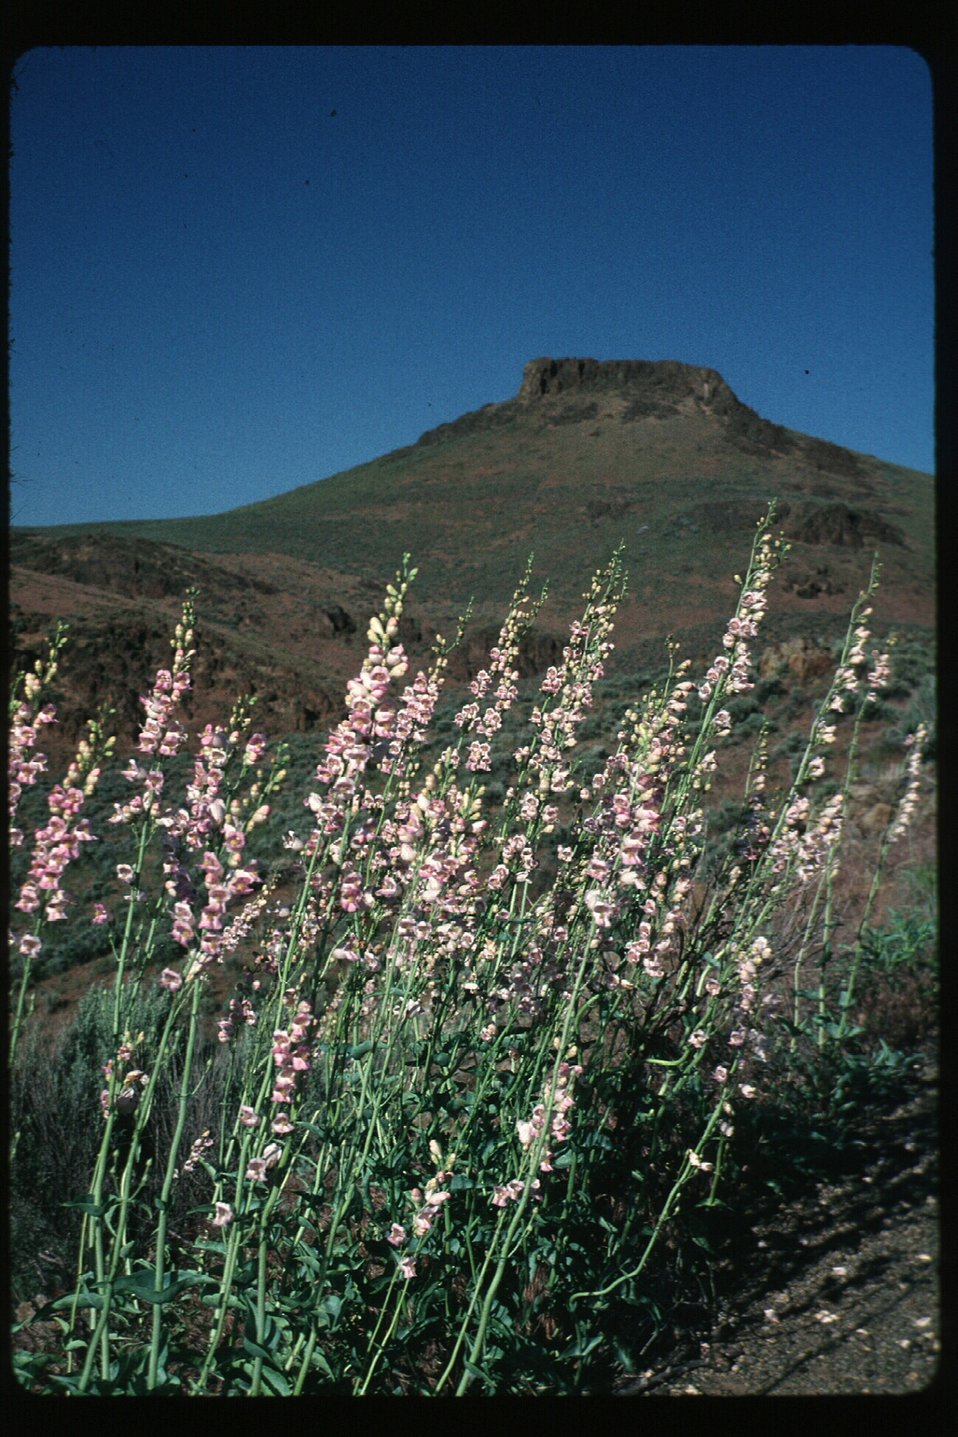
Penstemon Brush Rangeland Four Rivers Field Office LSRD Lower Snake River District